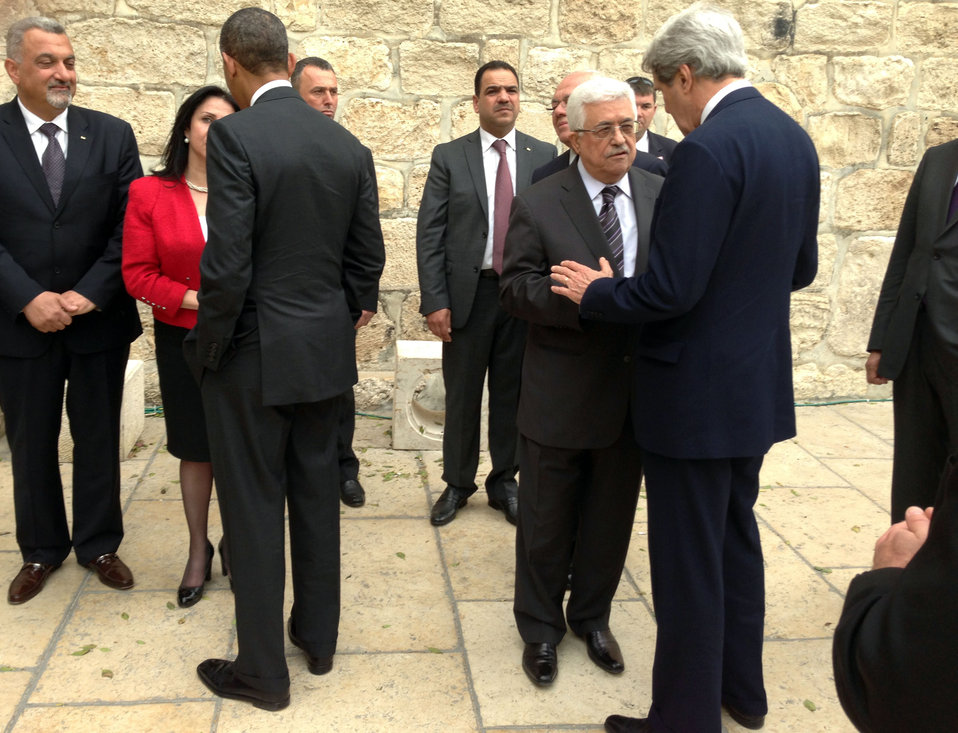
President Obama and Secretary Kerry Are Greeted By Palestinian Authority President Abbas and Bethlehem Mayor Baboun

U.S. President Obama and U.S. Secretary of State John Kerry are greeted by Bethlehem Mayor Vera Baboun, left, and Palestinian Authority President Mahmoud Abbas, right, upon arrival at the Church of the Nativity in Bethlehem on March 22, 2013.